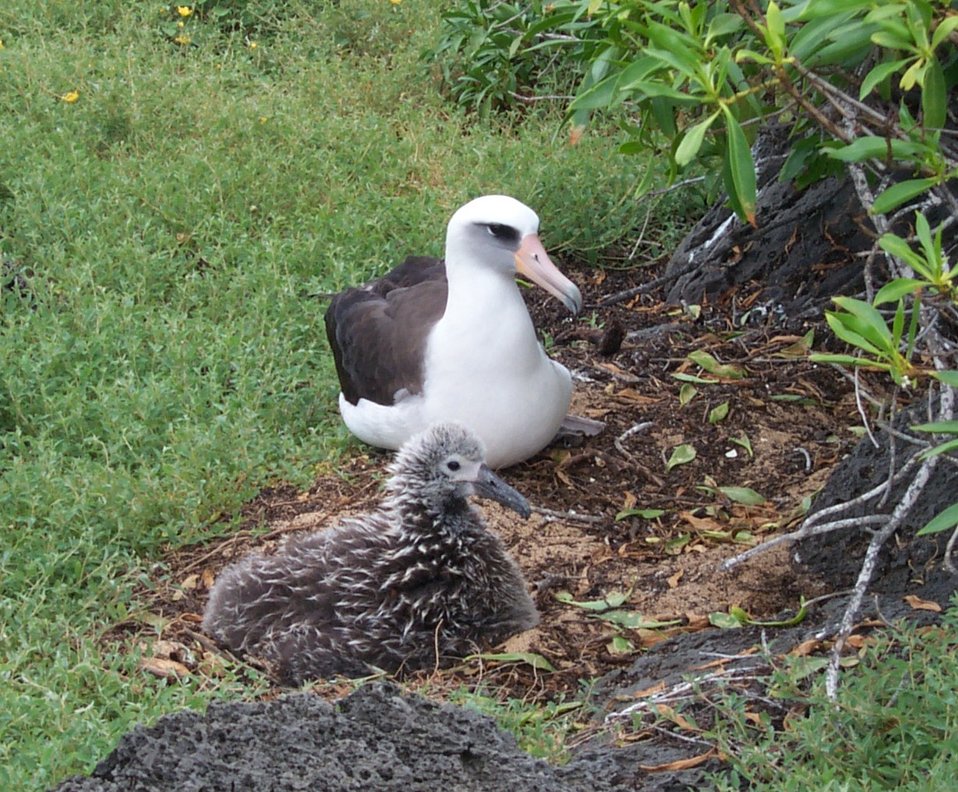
Laysan albatross, Credit USFWS Chris Swenson

USFWS Coastal Program in Hawaii worked with partners to construct a predator fence at Ka‘ena Point Natural Area Reserve on O‘ahu, benefitting the Laysan albatross and other native species.